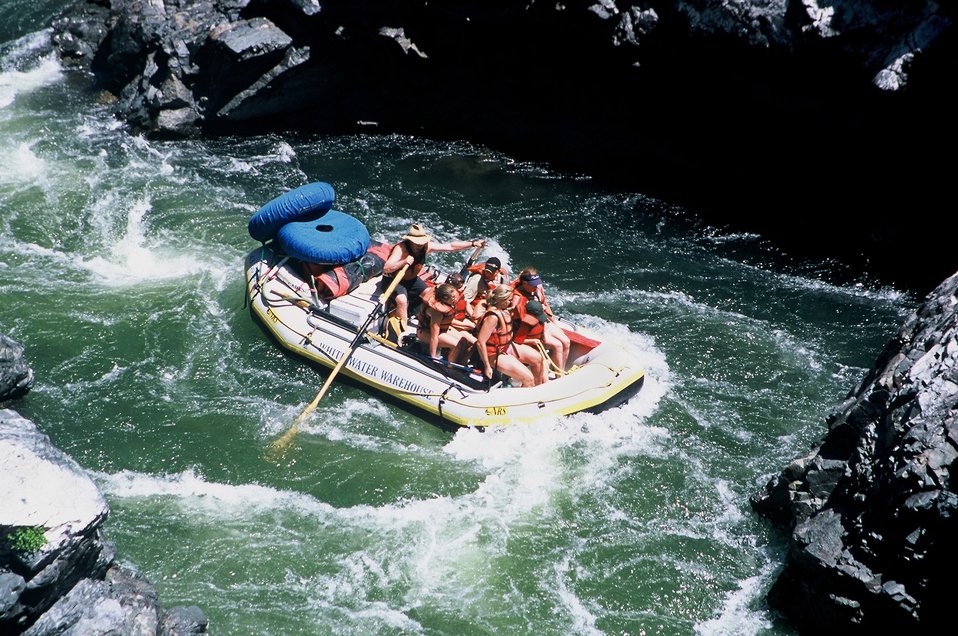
Coffee Pot